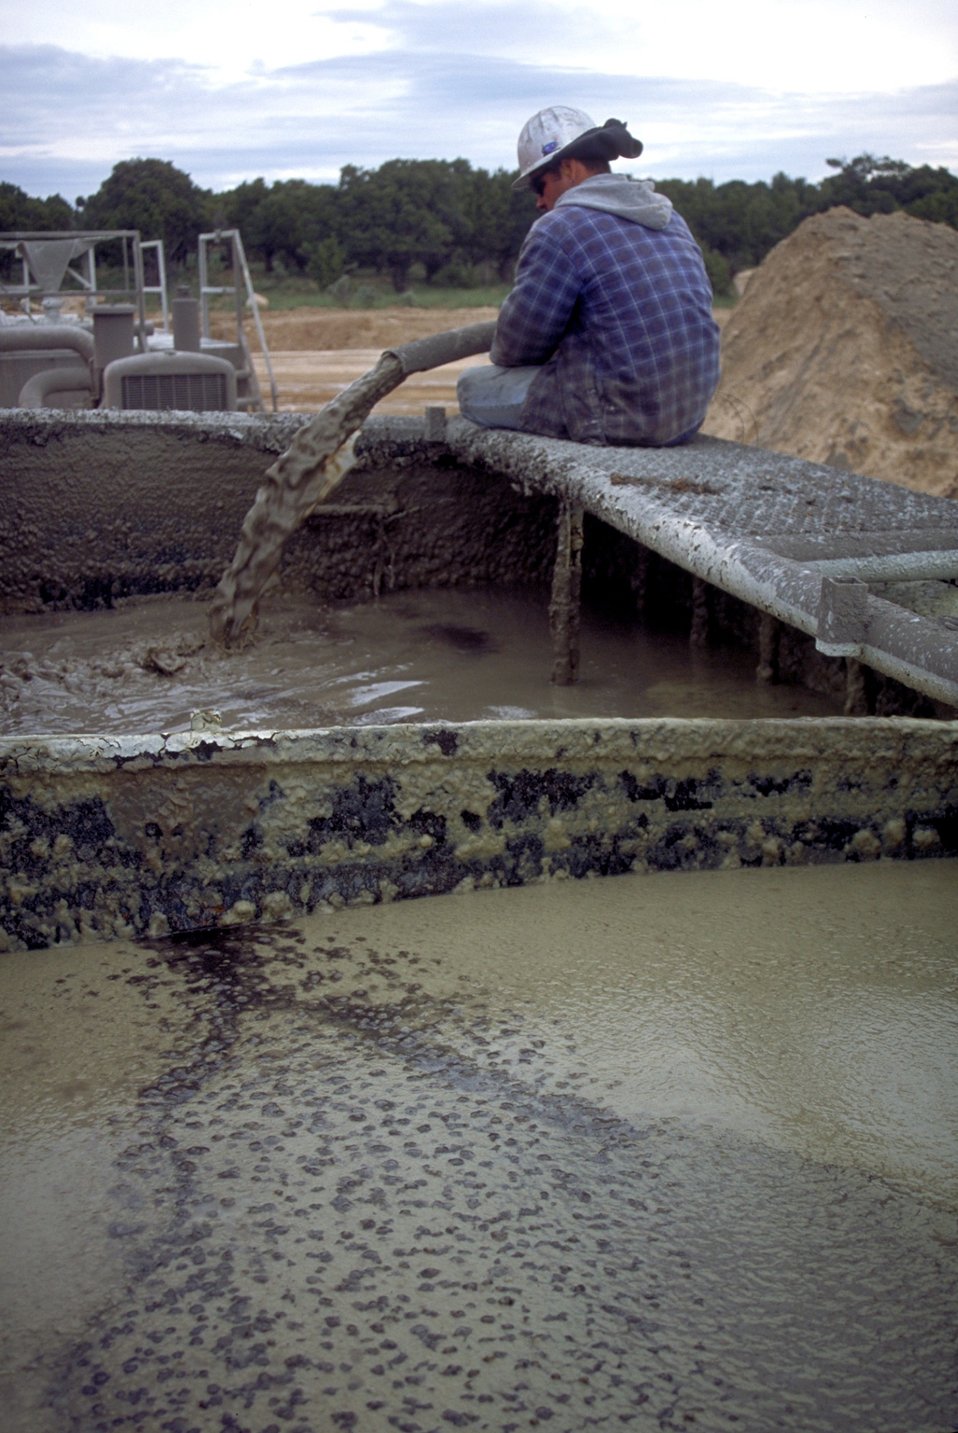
Drilling for coal bed methane near Price, Utah.